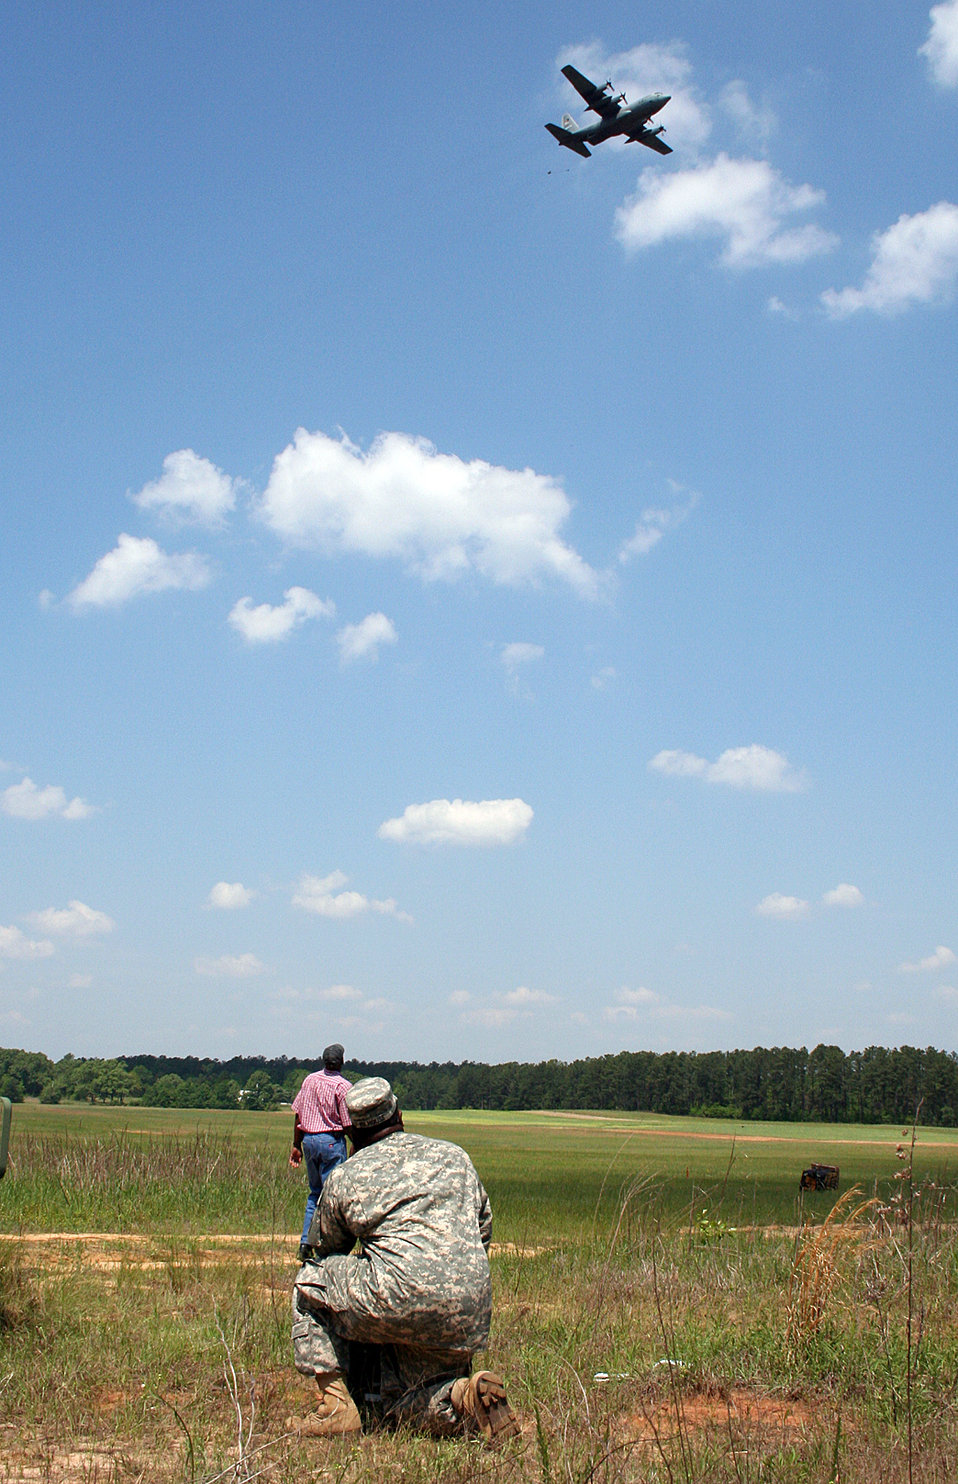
Army, Air Force open communications

Army Staff Sgt. Andre Milhouse of the 551st Signal Battalion attempts to communicate using a handheld radio with a C-130 Hercules crew from the 700th Airlift Squadron out of Dobbins Air Reserve Base, Ga. The joint training is the first of its kind at Fort Gordon, Ga., and will be added to the final capstone event of Army communications technical training at Fort Gordon.